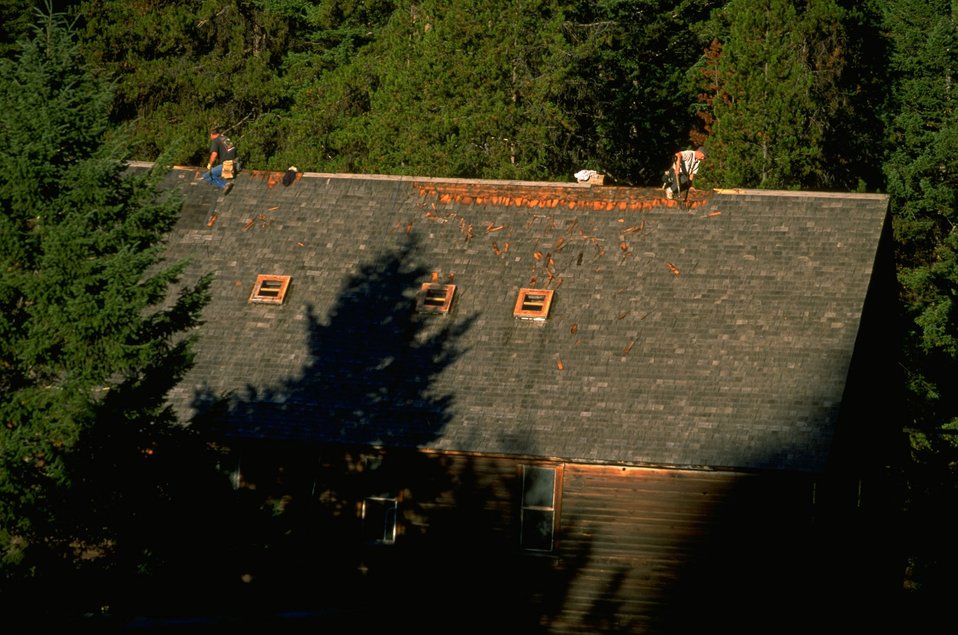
Garnet Ghost Town--stabilizing historic structure